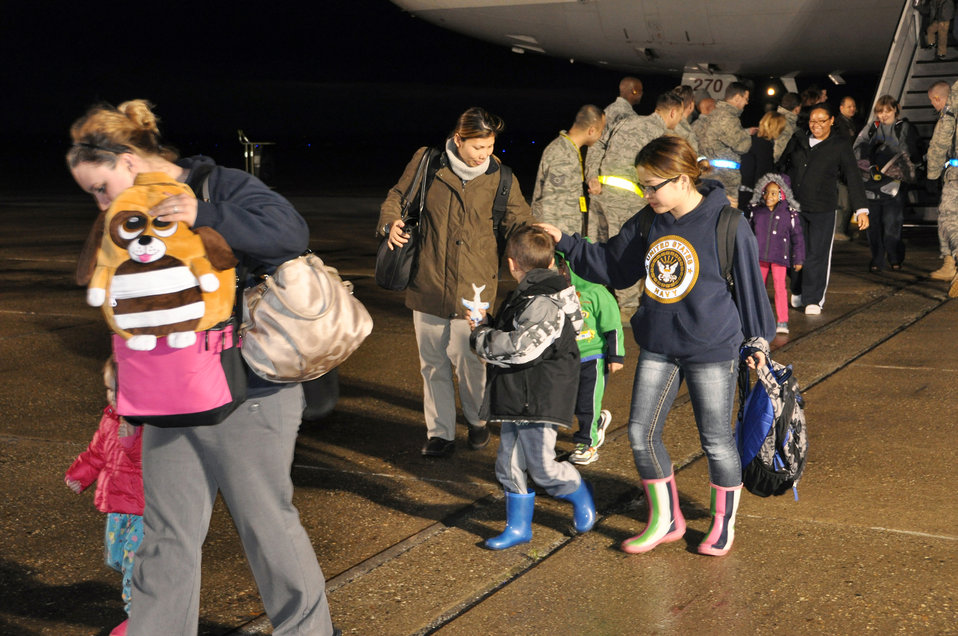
Members voluntarily leave Japan in support of Operation Pacific Passage

Passengers arriving from Japan of the DC-10 military-chartered flight de-boarded March 22, 2011, at Travis Air Force Base, Calif. Service members, family members and civil service employees voluntarily left Japan in efforts to assist and expedite recovery efforts in the country by reducing the demand for food, water, fuel and electricity during this national emergency while hundreds of thousands of Japanese citizens remain displaced.